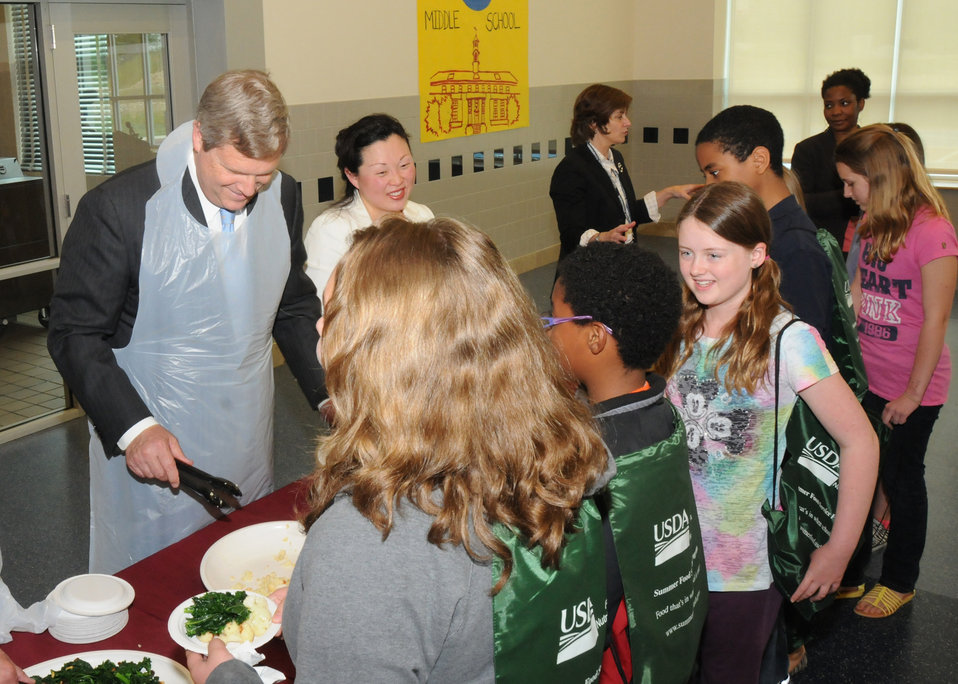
Agriculture Secretary Tom Vilsack serves a healthy snack of roasted garlic cauliflower with olive oil to 6th grade students at the Alice Deal Middle School in Northwest Washington, D.C. Alice Deal Middle School Principal Melissa Kim and D.C. Councilwoman Mary Cheh stand to the left of the Secretary handing out backpacks provided by the Food Nutrition Service for the students on Thursday, May 13, 2010. USDA photo 10di1358-224.